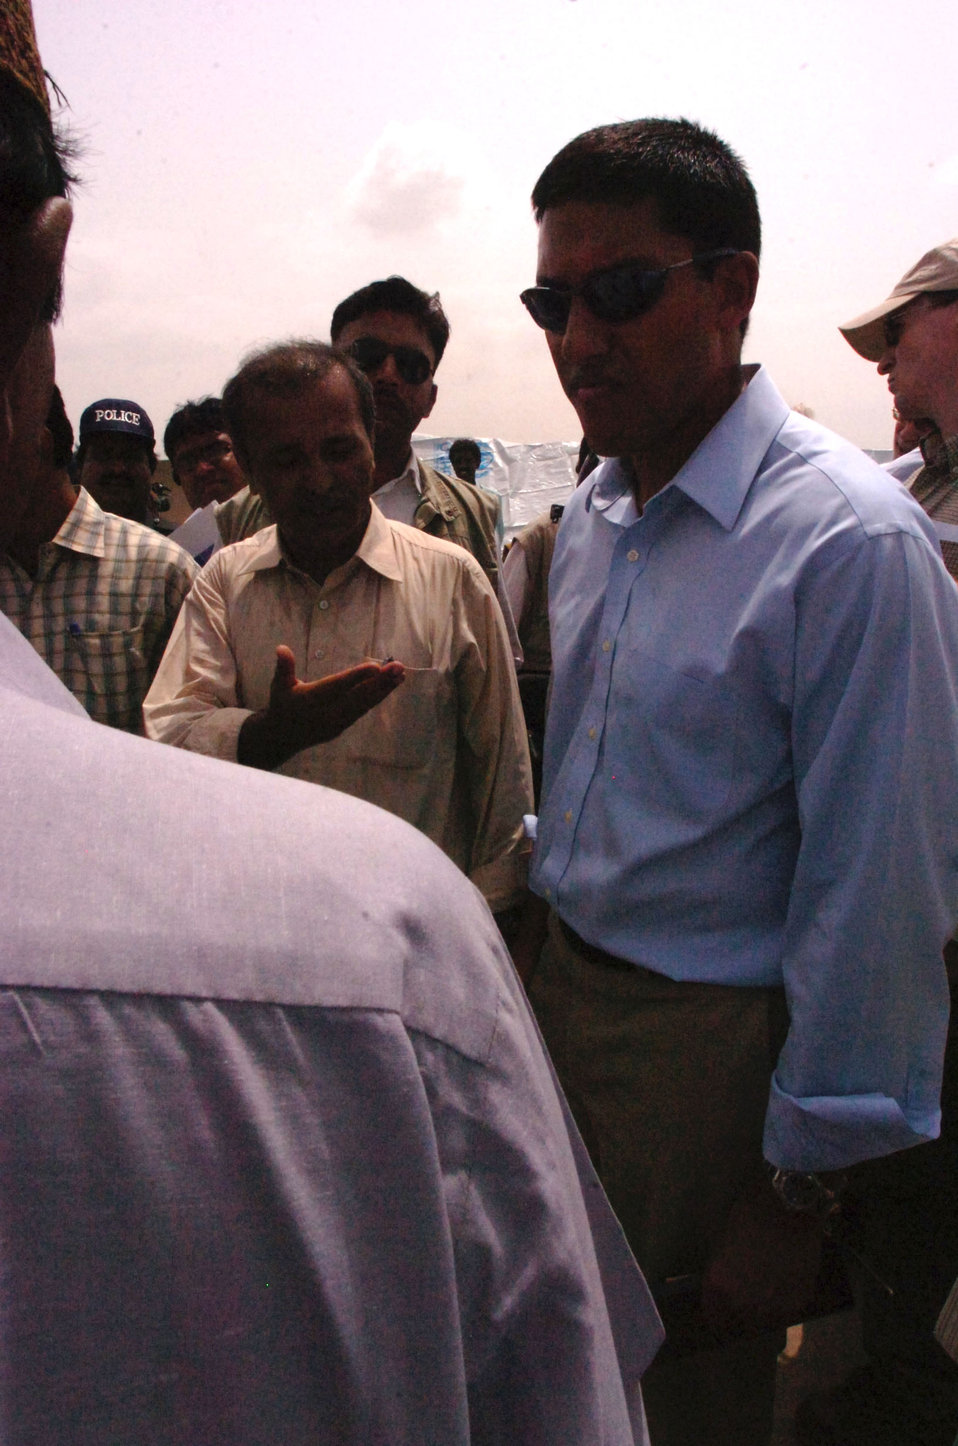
USAID Admin. Shah Consults With Pakistanis

Dr. Rajiv Shah, Administrator of the U.S. Agency for International Development (USAID), arrives in Pakistan to consult with the Government of Pakistan and international and non-governmental organizations on the extensive U.S. response to the country's devastating floods on August 24, 2010.